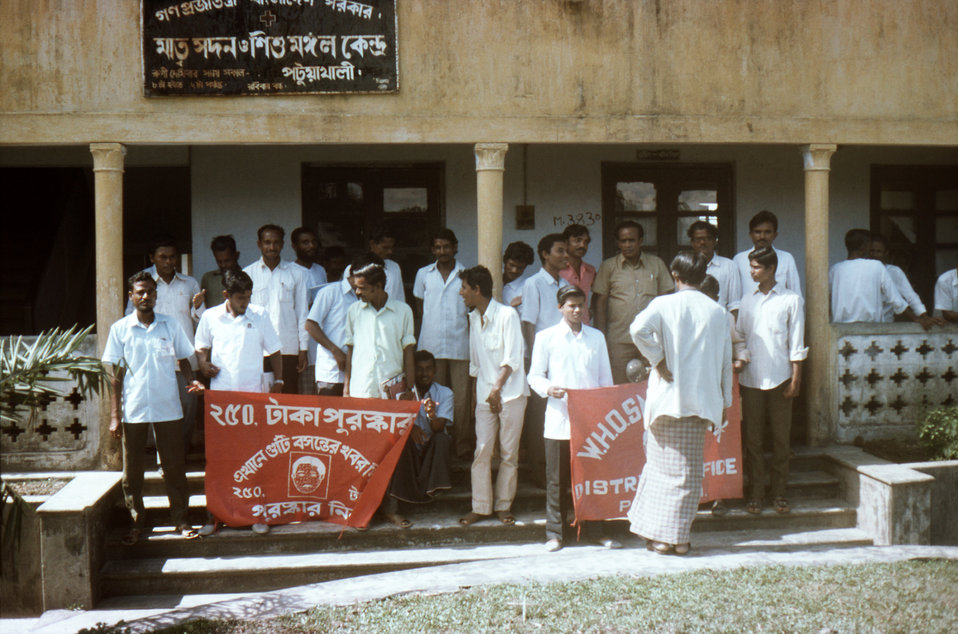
In this November, 1975 image, members of the Patuakhali District Surveillance Team, were preparing for a group photograph, after the National Smallpox Search Program. The team was posed in front of the Patuakhali District Health Office. Note the Smallpox Reward Banner being displayed by a few group members on the left. For a better view of this banner, see PHIL 12360.